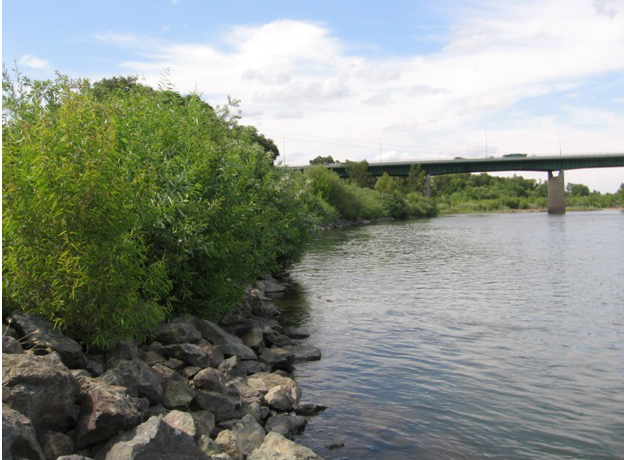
Willows near Yuba City, Calif., shown in 2009, look similar to willows the U.S. Army Corps of Engineers Sacramento District is planting along the Sacramento River levee to provide shaded riparian habitat for threatened fish species. The district worked with the U.S. Fish and Wildlife Service and National Marine Fisheries Service to design the project for habitat benefit, and is the first Corps district to receive a variance under the Corps’ levee vegetation policy to plant willows near the levee after engineering analysis showed they won’t threaten the levee.